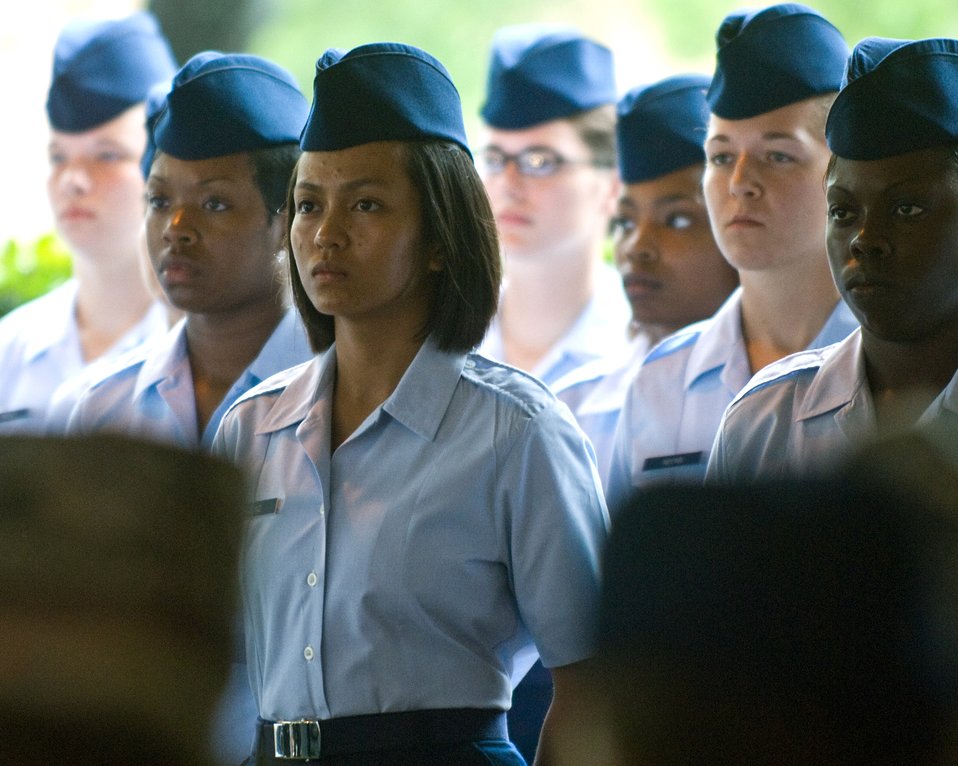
SECDEF visits Airmen, tour BMT facilities

Basic training graduates stand at parade rest during a coin ceremony at Lackland Air Force Base, Texas, July 24.